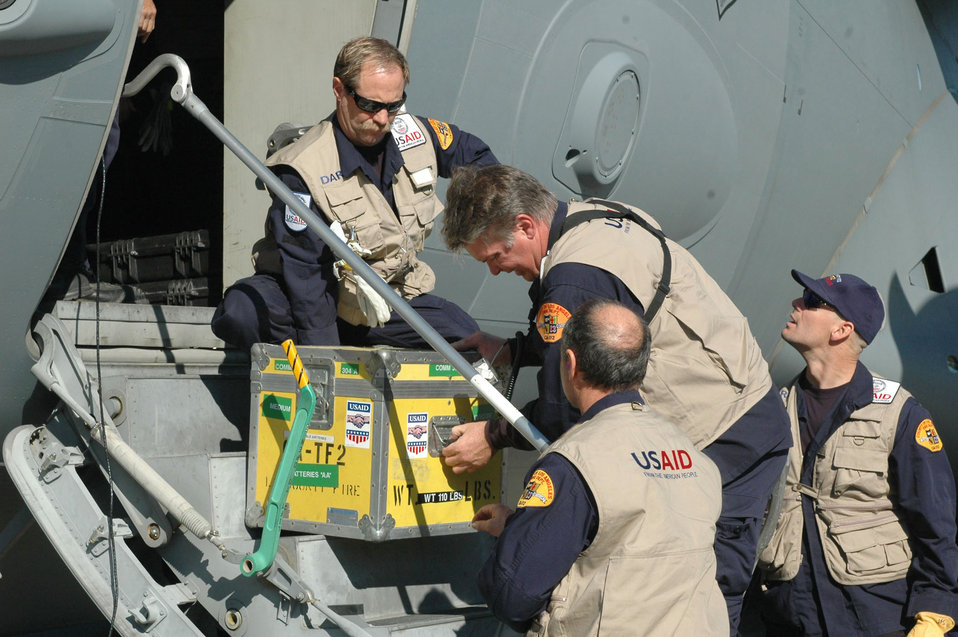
Airmen deliver urban search, rescue team to Haiti

California Task Force 2 members unload humanitarian relief supplies from a C-17 Globemaster III Jan. 14, 2010, in Port-au-Prince, Haiti.